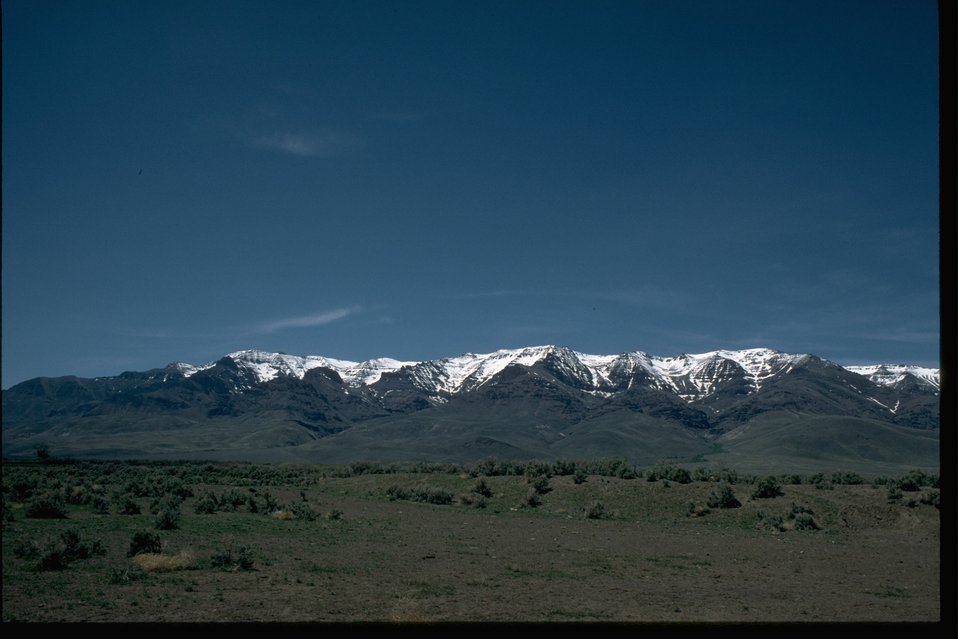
Steens Mountain